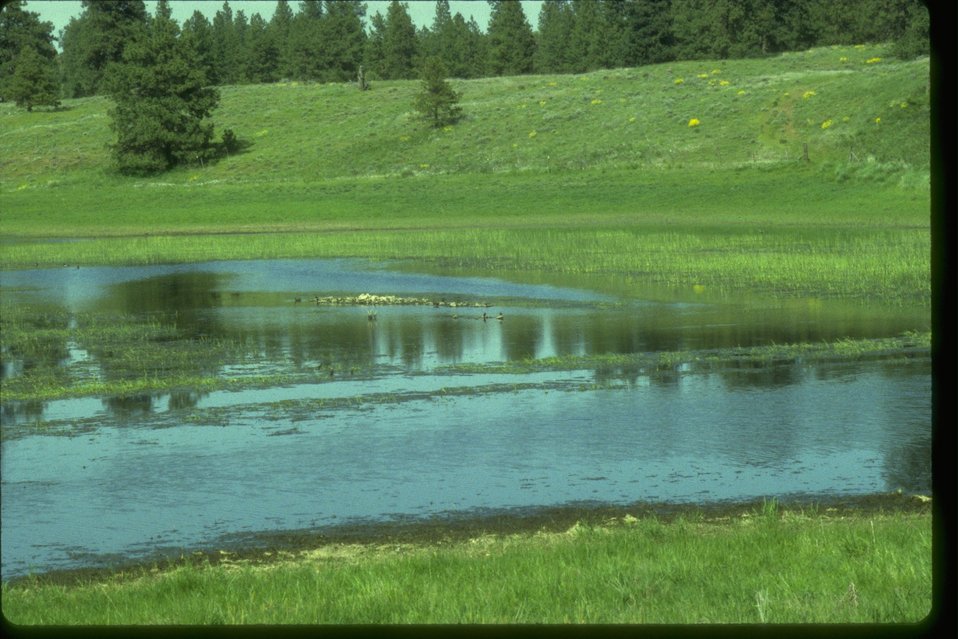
Wetlands at Smick Meadow in Fishtrap area, Lincoln County, Washington